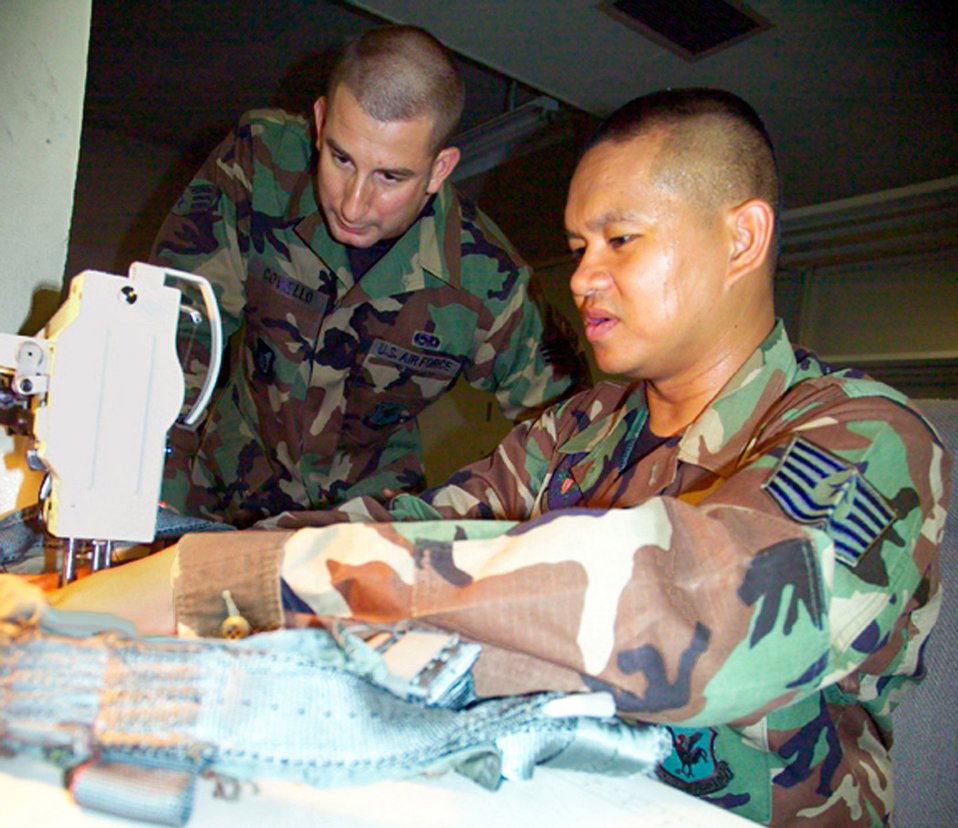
Life support, survival equipment career fields merging

Airman 1st Class Robert Coviello (left) instructs Tech. Sgt. Calvin Warner on sewing techniques for repairing a harness July 12 as part of cross-utilization training being conducted at the 18th Operations Support Squadron at Kadena Air Base, Japan, to merge aircrew life support and survival equipment into a new Air Force specialty code, aircrew flight equipment.